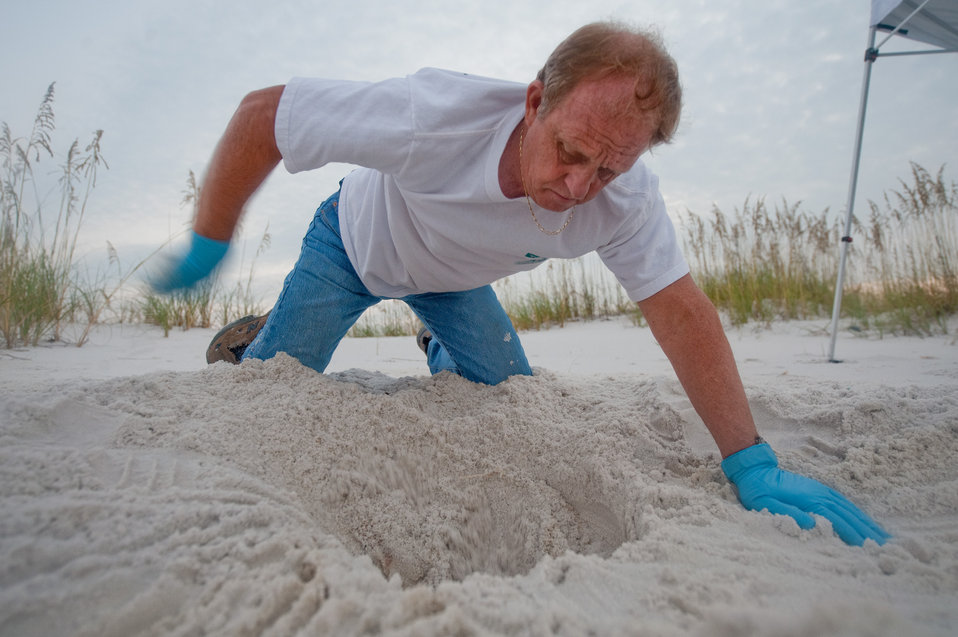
Turtle Eggs avoid Gulf Oil Danger

Before sunrise, Bob Miller uses his hands to carefully excavate a Loggerhead sea turtle nest at Eglin Air Force Base, Florida, on August 9, 2010. Mr. Miller is the Sea Turtle Program Manager of the 96th Civil Engineer Squadron. The 112 eggs below will be placed in Styrofoam coolers with the white sand. Because of the critical attachment of the embryo to the inside of the egg shell, the eggs must be gently transported to the Atlantic coast where they will be allowed to hatch in the cooler. Wildlife technicians will then release them into the ocean.